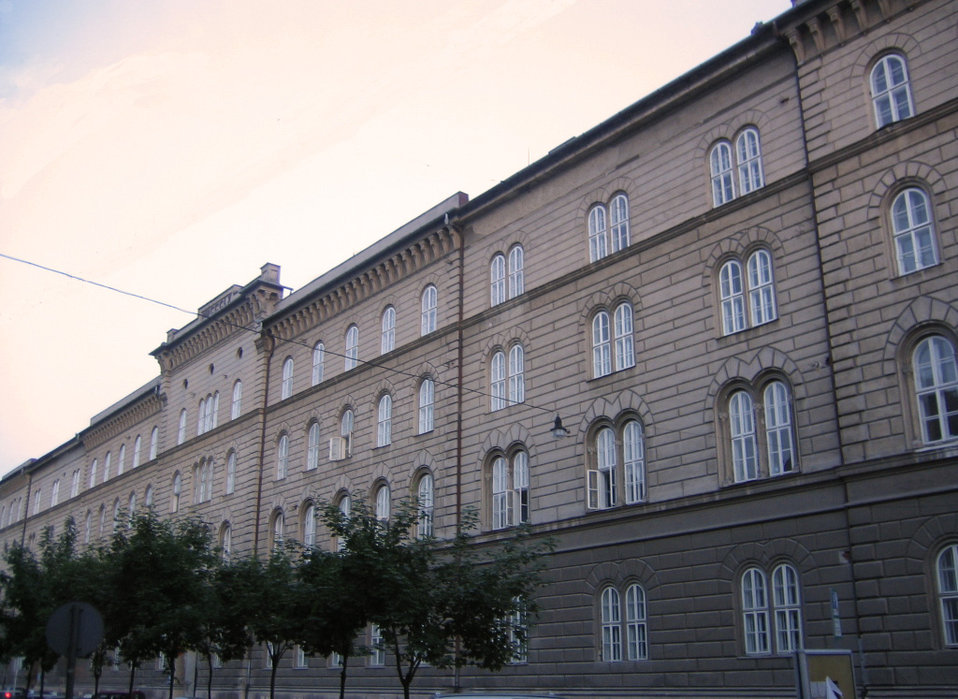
Palatul Dicasterial (Timişoara) This is a photo of a historic monument in județul Timiș , classified with number TM-II-m-A-06135